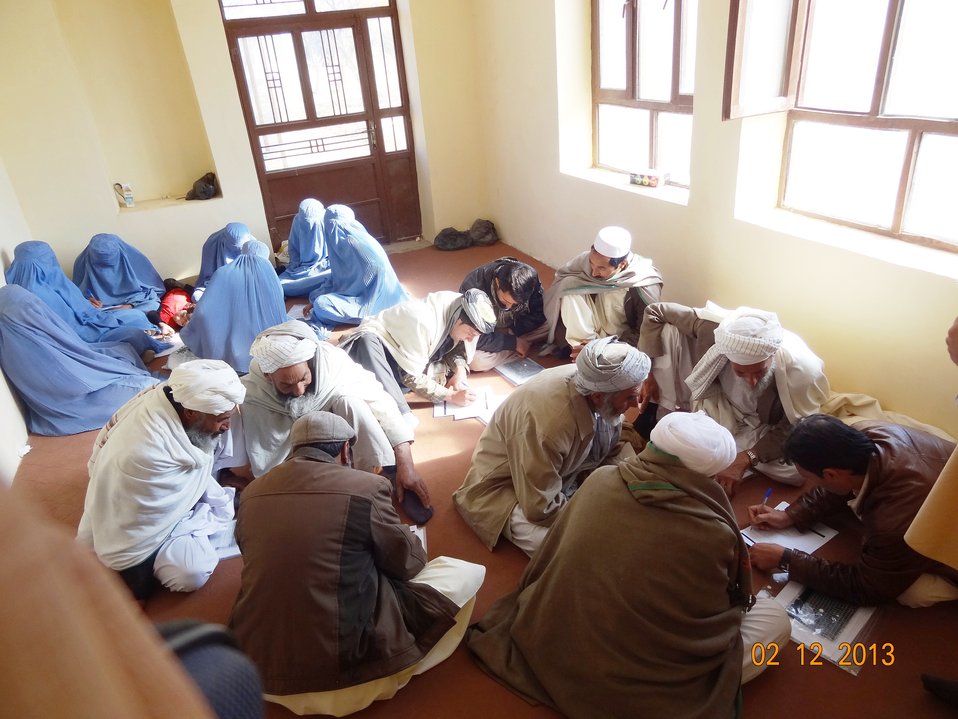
17 members of Kushk Haibat CDC in Pashtun Zarghun District received Advocacy and Concept Note training on Dec 2nd